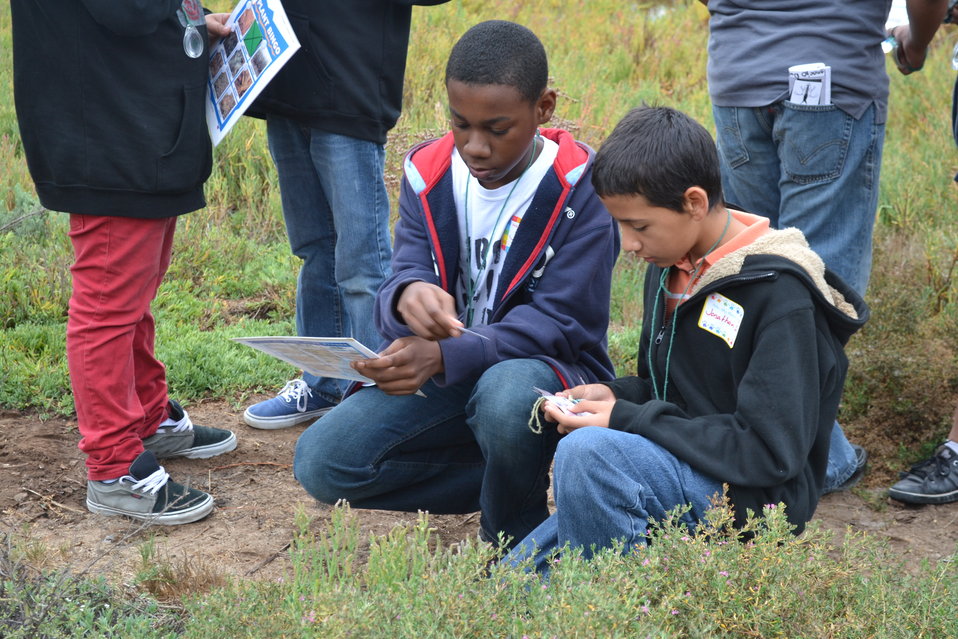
Discussing the differences in salt marsh plants